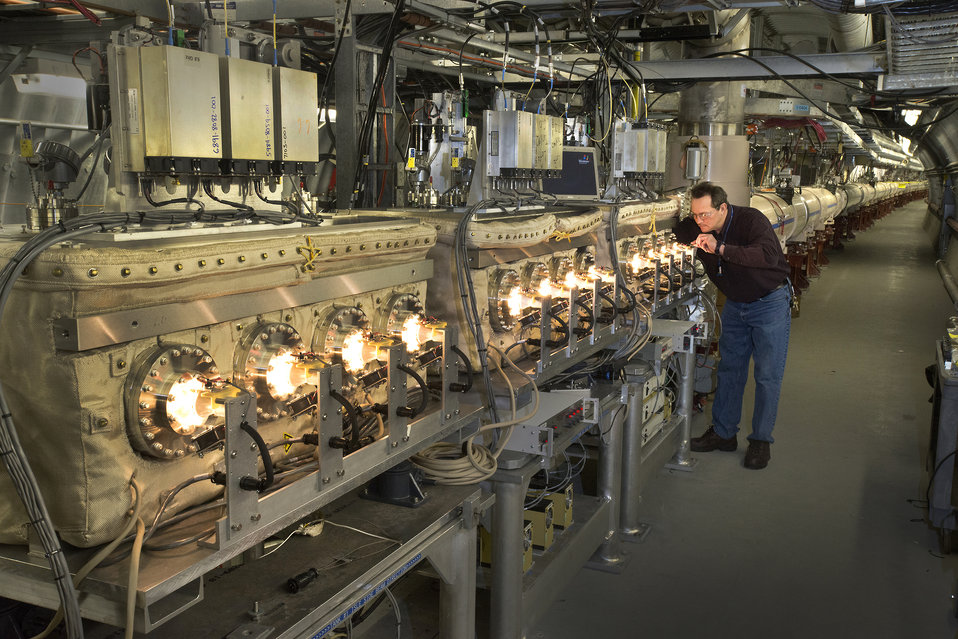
BNL TECHNICIAN MIKE MYERS CHECKS COMPONENTS OF STOCHASTIC COOLING 'KICKERS,' WHICH GENERATE ELECTRIC FIELDS TO NUDGE IONS IN THE RELATIVISTIC HEAVY ION COLLIDER'S (RHIC) GOLD BEAMS BACK INTO TIGHTLY PACKED BUNCHES.

This system of squeezing and cooling beams has produced dramatic increases in collision rates-and the data coming out of RHIC.